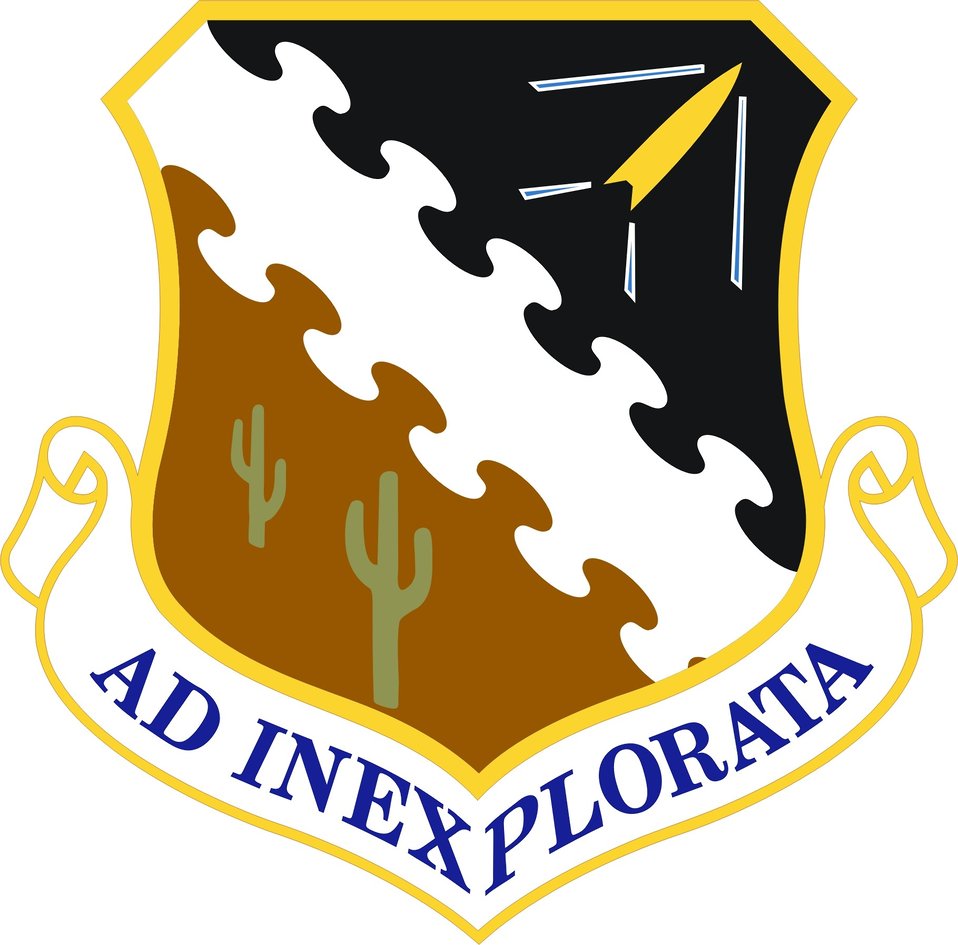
Air Force Flight Test Center shield.